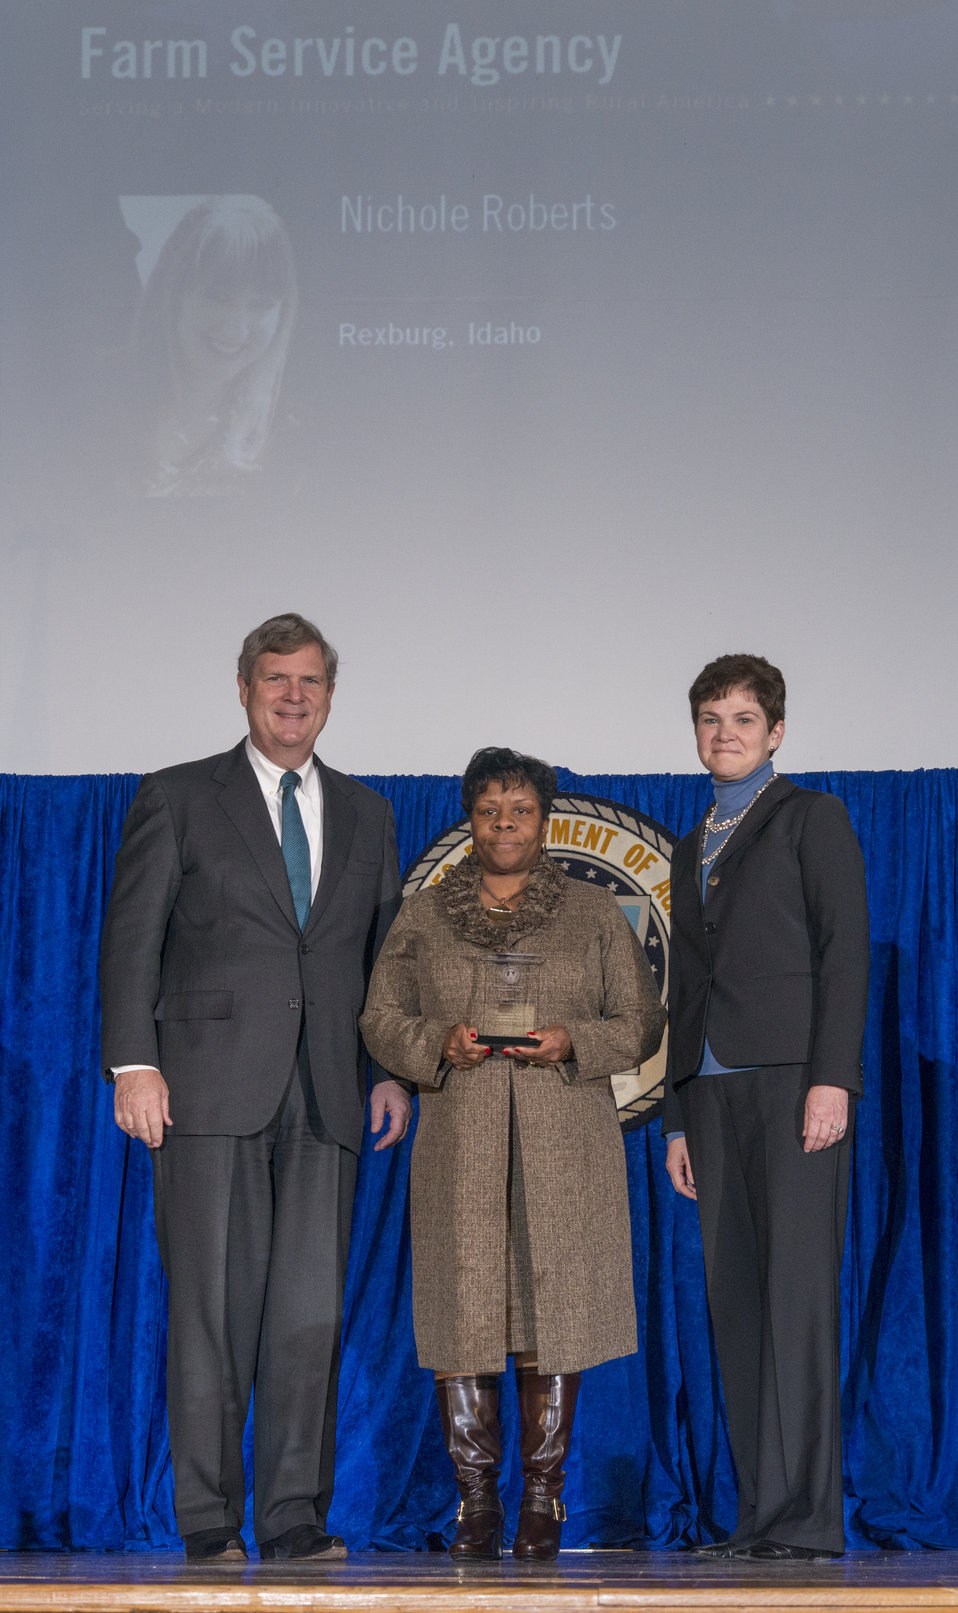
Agriculture Secretary Tom Vilsack and Agriculture Deputy Secretary Krysta Harden present the Secretary’s Honor Award to Farm Service Agency (FSA) employee Nichole Roberts from Rexburg, ID (accepting Lisa Slay) for demonstrating outstanding performance in technical responsibilities for two offices, while developing innovative systems that improve program delivery at the 2013 Secretary's Honor Awards in the Jefferson Auditorium at the U.S. Department of Agriculture (USDA) in Washington, D.C. on Wednesday, Dec. 11, 2013.